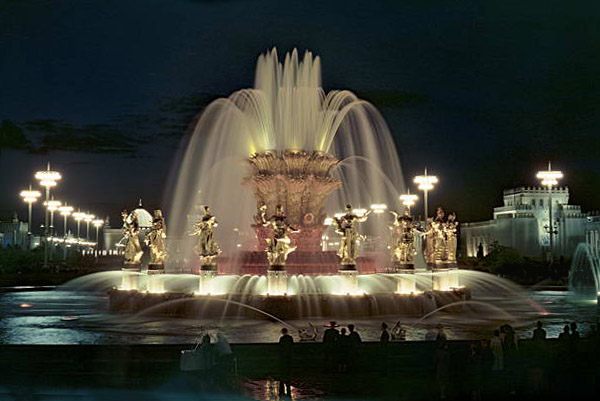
Русский: вот так выглядел фонтан дружбы народов СССР на ВСХВ